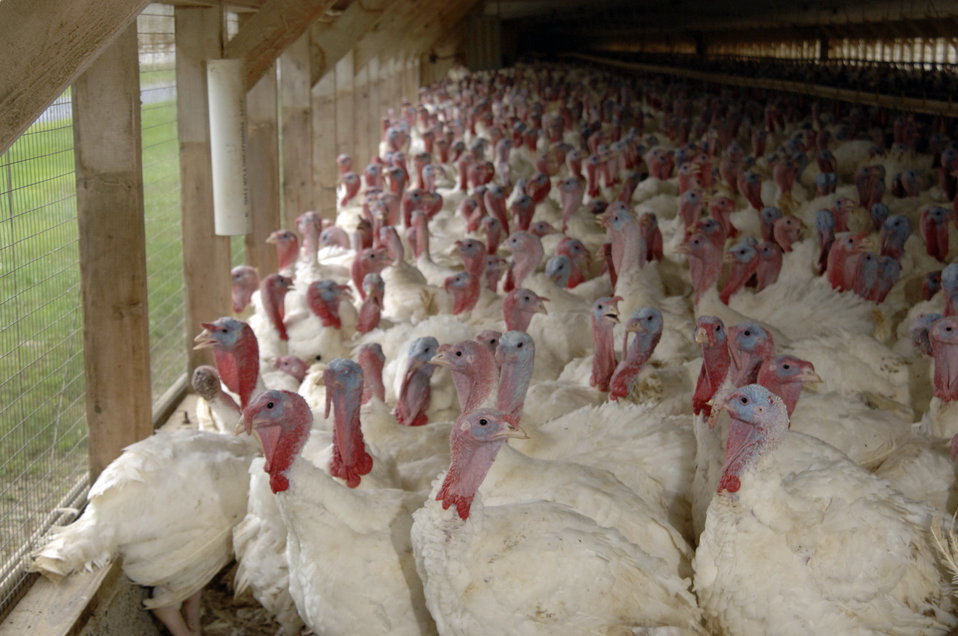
Farm-bred domesticated turkeys are big business in Rockingham County, Virginia on September 9, 2008.